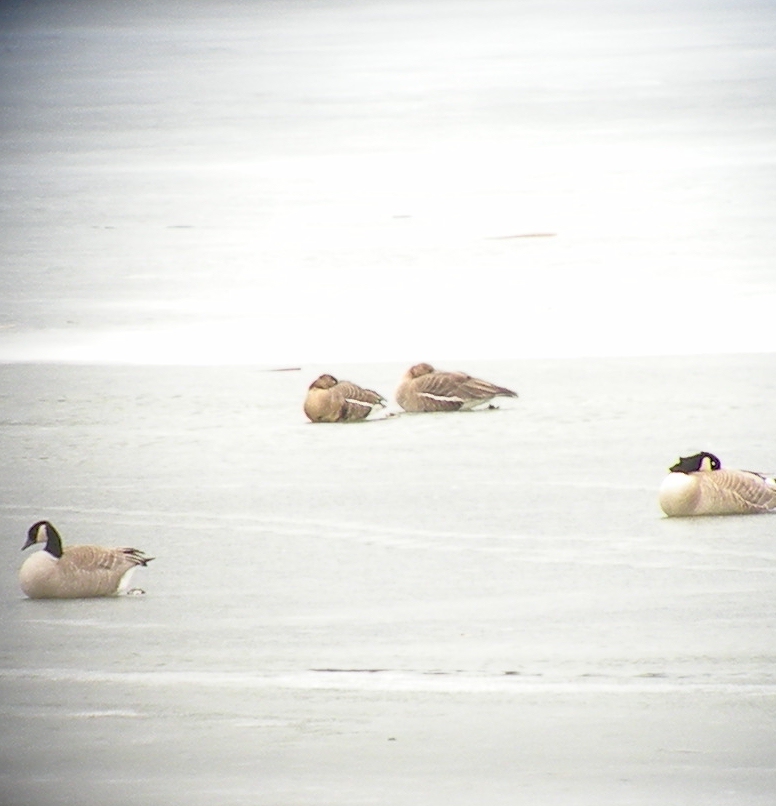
Greater White-fronted Goose

Digiscoped image of 2 Anser albifrons resting on ice of Pond 10 at Lee Metcalf National Wildlife Refuge in 2011. This species is very uncommon in visitation here; last sighting about 2 years ago. Found by Refuge volunteers Deb Goslin and Carl Mehaffie.